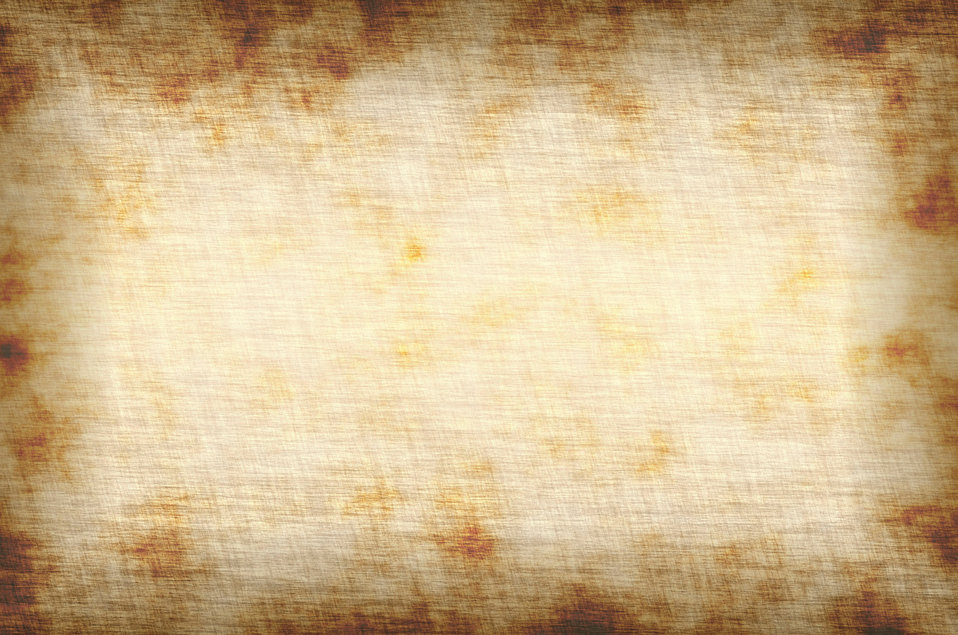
Background

Old background.